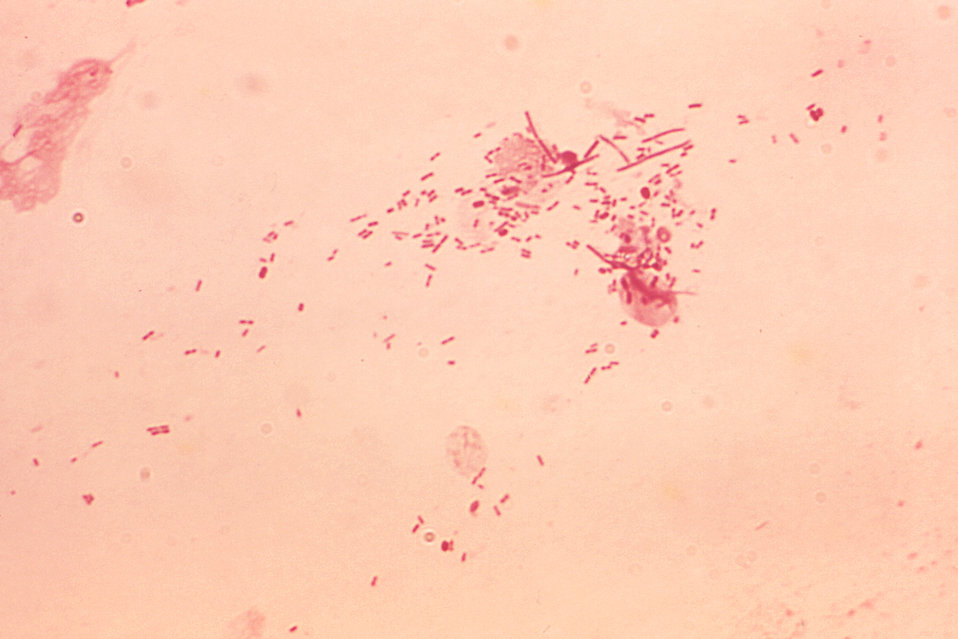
Taken from a cervical smear specimen, this Gram-stained photomicrograph reveals the presence of 'deceptive' extracellular diplococcal bacteria. Of importance, a bacterial culture returned a negative result.